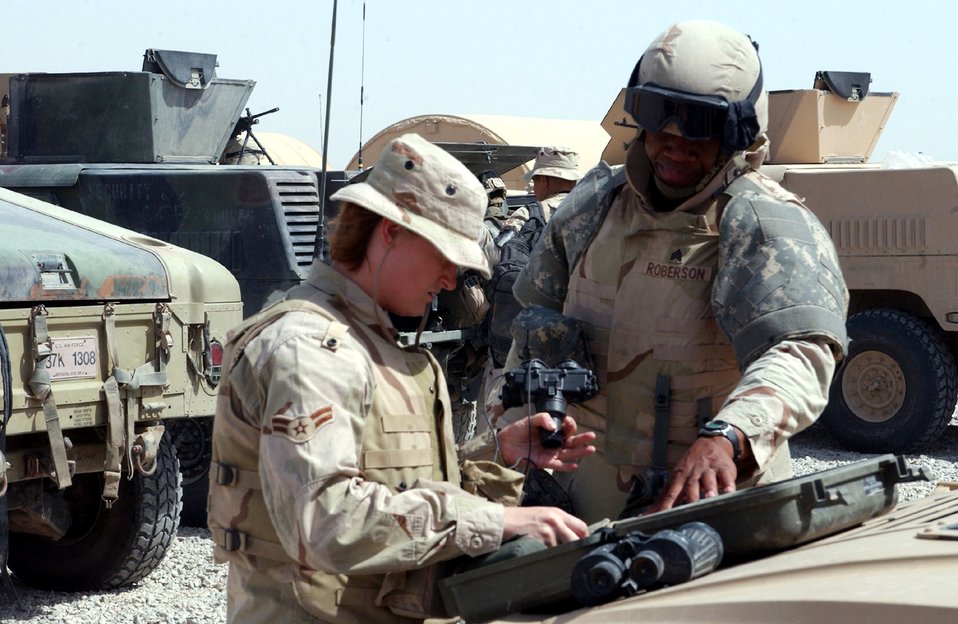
Airmen train Soldiers for protection mission

Airman 1st Class Shasta Williams and Army Sgt. Jonathan Roberson inventory equipment before heading out on a patrol at Ali Base, Iraq, on Friday, June 16.